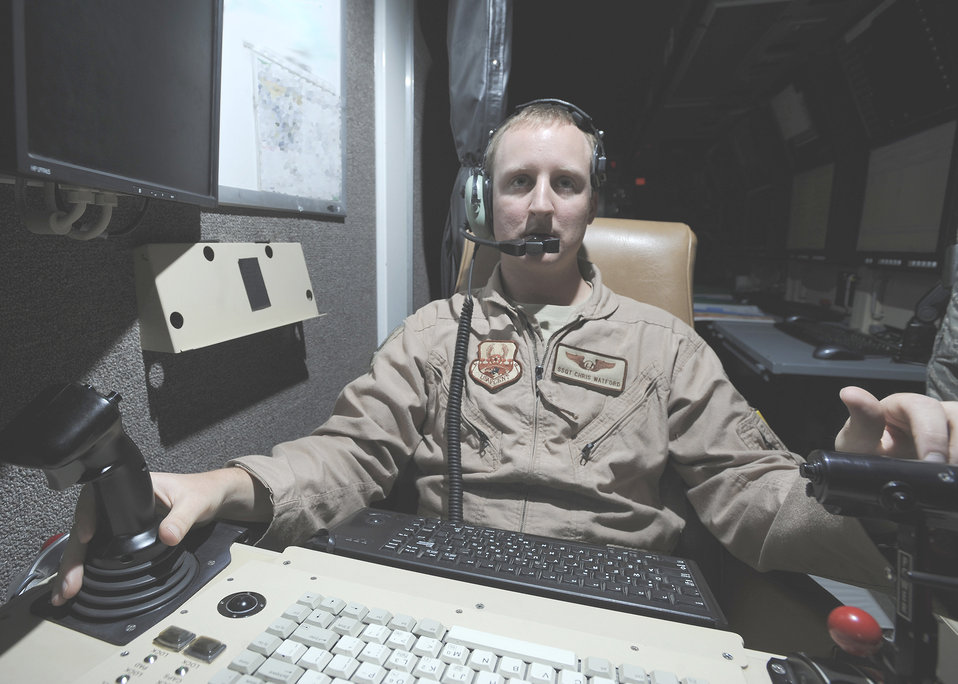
Balad Predators

Staff Sgt. Christopher Watford controls an MQ-1B Predator's sensor during a routine mission Aug 3, 2010, at Joint Base Balad, Iraq. Sergeant Watford is a 46th Expeditionary Reconnaissance Squadron sensor operator. His mission is to operate sensors and weapons, and also be a mission coordinator when needed.